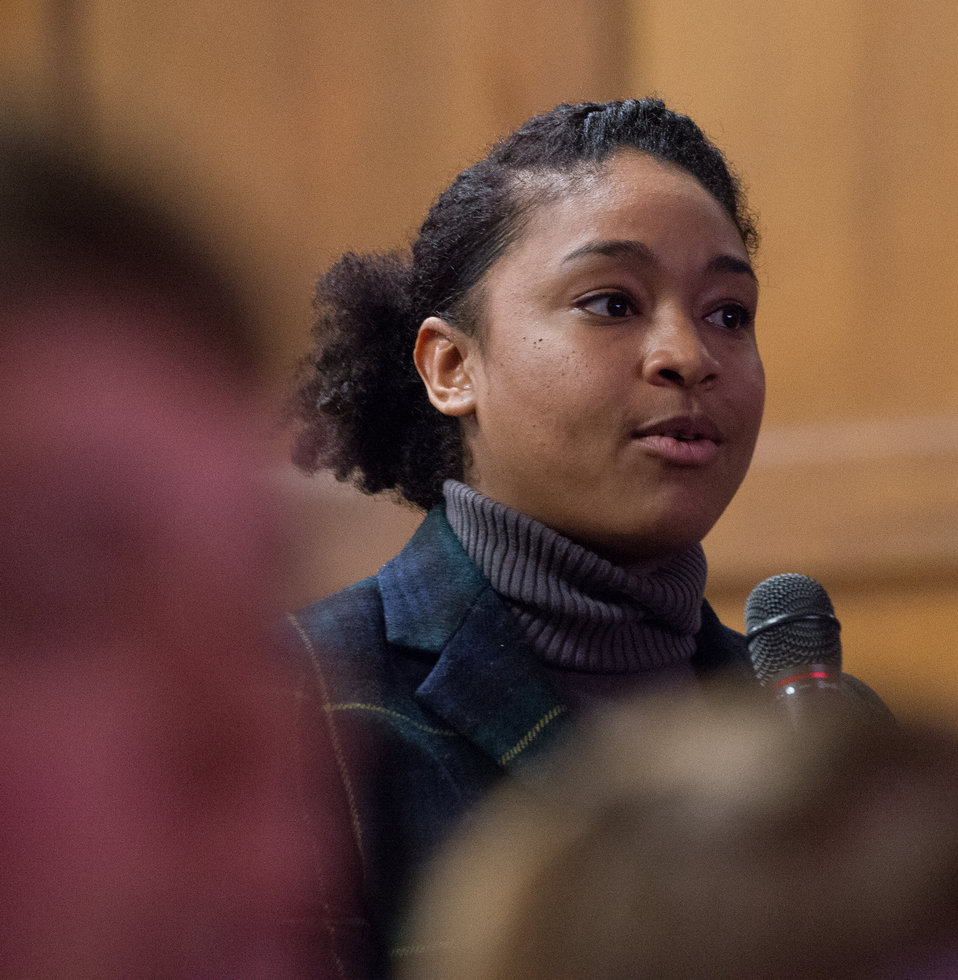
A student poses a question to the discussion panels at he Borlaug Symposium commemorating the late Dr. Norman Borlaug's 100th Birthday and vision, held in the Jefferson Auditorium of the U.S. Department of Agriculture (USDA) in Washington, D.C. on Tuesday, Mar. 25, 2014. The symposium highlights current efforts addressing global hunger. The symposium panels will feature high school and university students, as well as, scientists and policy advisors at Monsanto Chief Technology Officer Robb Farley talks about mobile communication and it's relationship to agriculture, at the Borlaug Symposium commemorating the late Dr. Norman E. Borlaug's 100th Birthday hosted by the U.S. Department of Agriculture (USDA) in the Jefferson Auditorium of USDA in Washington, D.C. on Tuesday, Mar. 25, 2014. The symposium will highlight current efforts addressing global hunger. The symposium panels will feature high school and university students, as well as, scientists and policy advisors at U.S. Agency for International Development (USAID), USDA and Non-Governmental Organizations (NGO). The symposium was planned in partnership with: U.S. Agency for International Development (USAID), Cornell University, Iowa State University, University of Minnesota, The Norman Borlaug Institute for International Agriculture, Texas A and M University, and the World Food Prize.